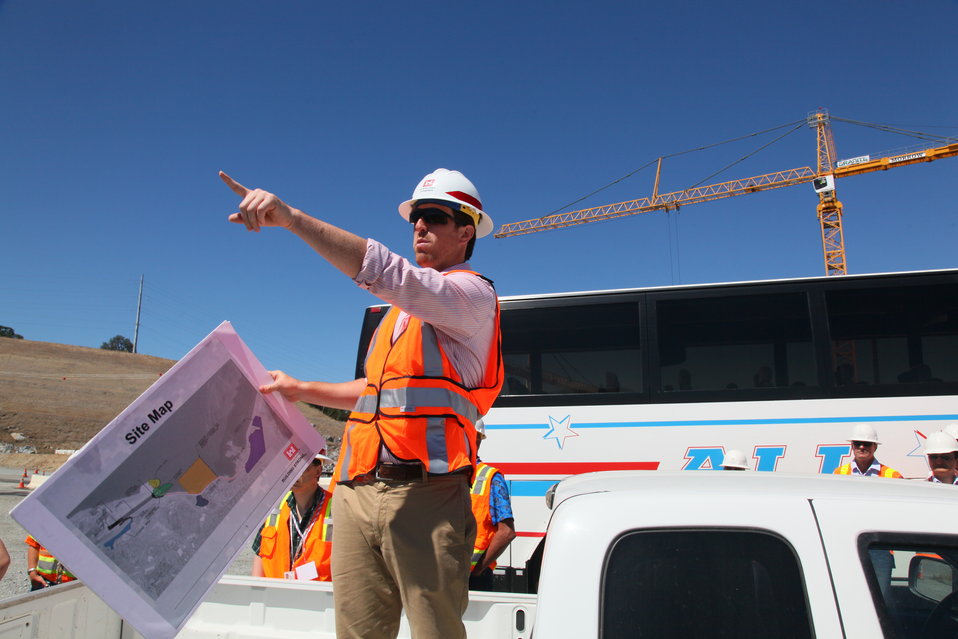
Industry Day for Phase IV of the Folsom Joint Federal Project

Civil engineer Jeff Wisniewski, with the U.S. Army Corps of Engineers Sacramento District, points out features of the Folsom Dam Joint Federal Project to contractors during an Industry Day event in Folsom, Calif., June 7, 2012. Wisniewski is the technical lead for Phase IV of the project, and helped provide prospective contractors attending the event with information about the generalized scope and site conditions for the proposed Phase IV underwater construction. The Folsom Dam Joint Federal Project is a joint effort of the Corps, U. S. Bureau of Reclamation, the Central Valley Flood Protection Board and the Sacramento Area Flood Control Agency to improve the safety of the current dam and reduce flood risk for the greater Sacramento area.